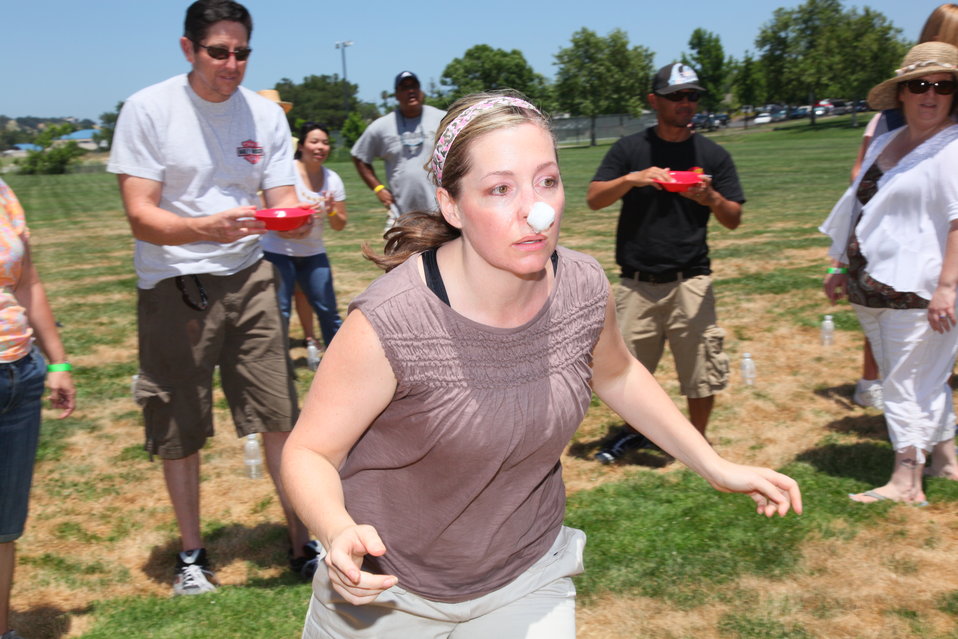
2011 Annual Picnic